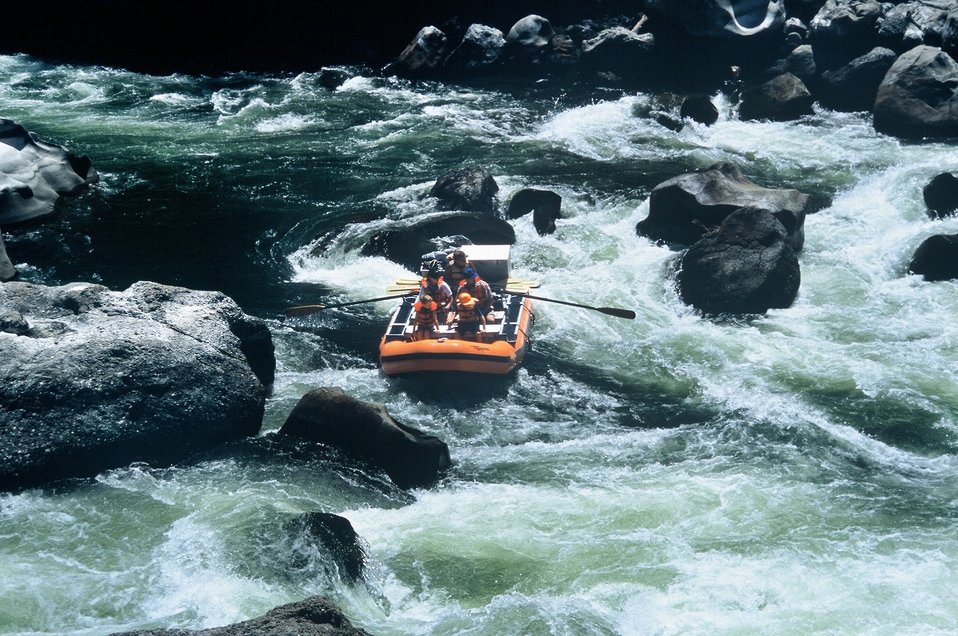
Blossom Rapids